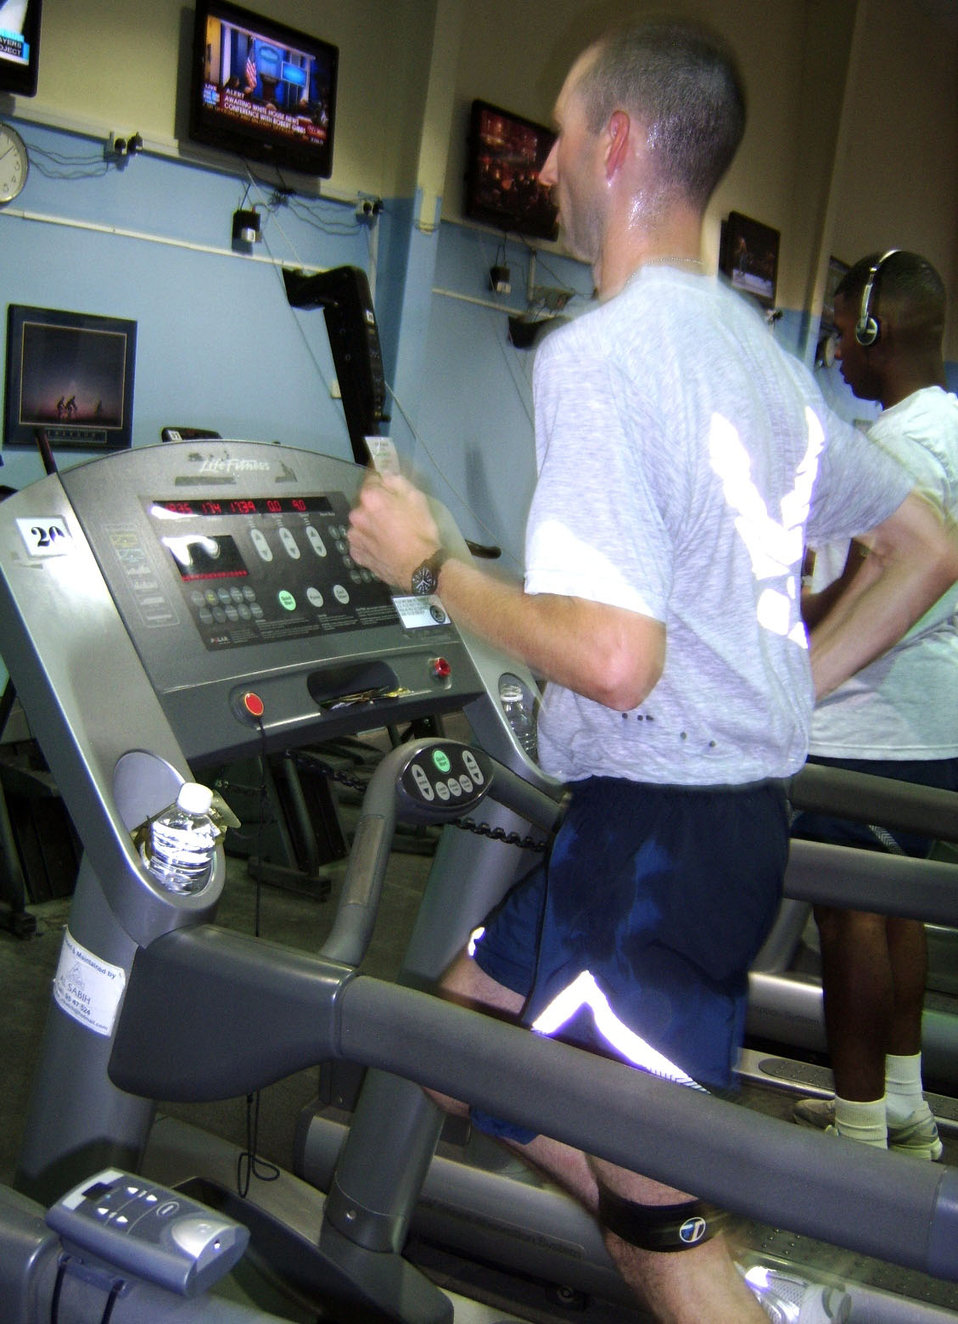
Treadmill marathon

Staff Sgt. Jason Blair, a 387th Air Expeditionary Group emergency management craftsman at an air base in Southwest Asia, ran a personal best 2-hour, 56-minute marathon on a treadmill at the base fitness center Oct. 13, 2009.